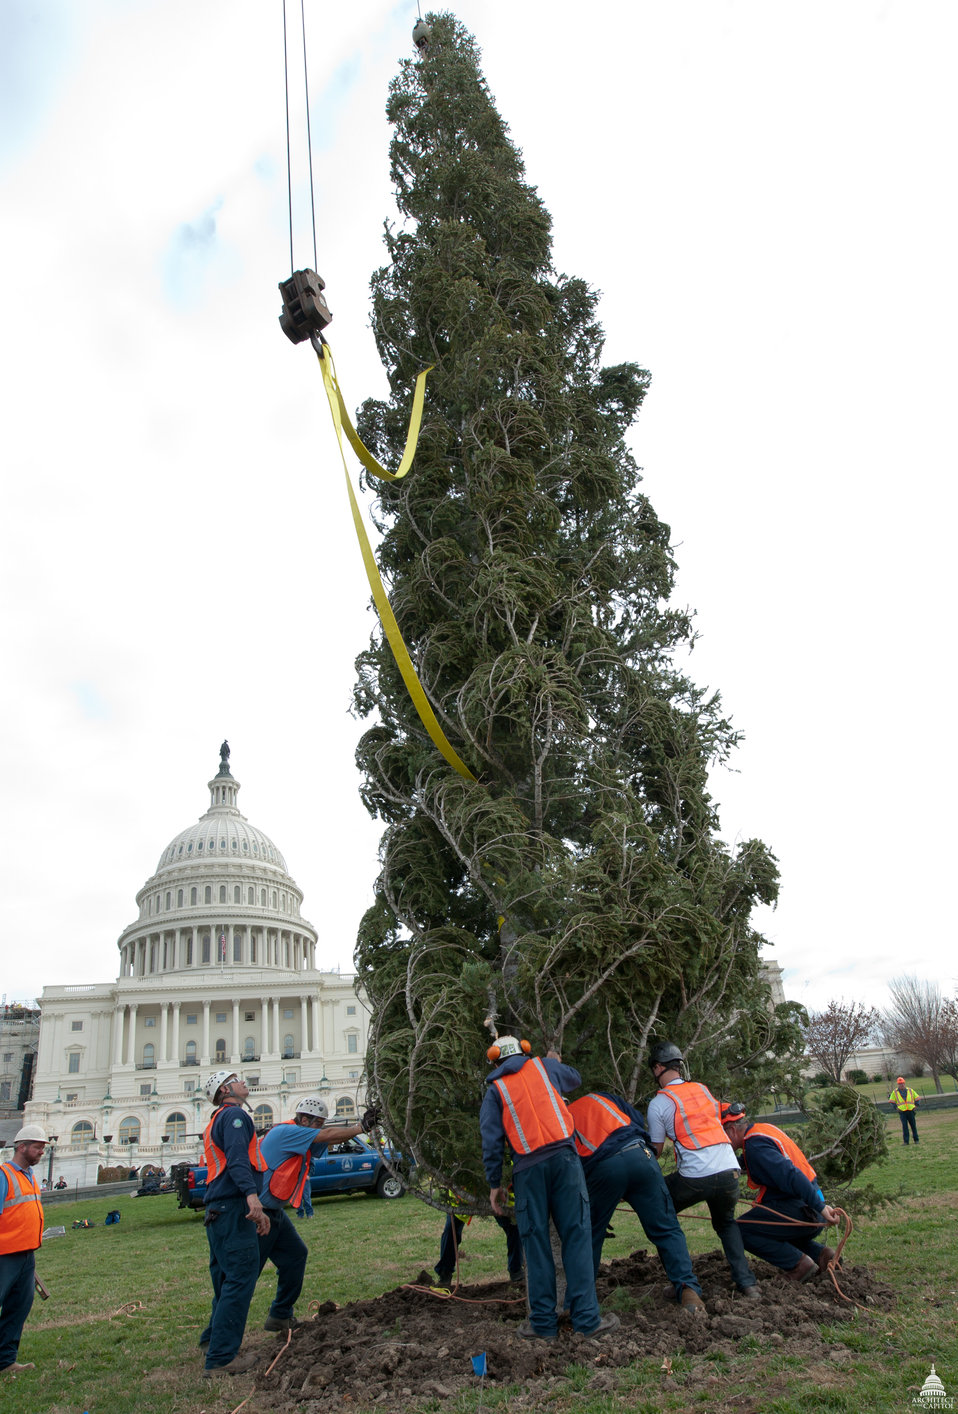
Christmas Tree Arrives as the U.S. Capitol

Architect of the Capitol employees place the 2011 Capitol Christmas Tree on the West Front lawn of the U.S. Capitol.

The tree will be lit by Speaker of the House John Boehner during a ceremony on Tuesday, December 6, on the Capitol’s West Front lawn beginning at 5 p.m.